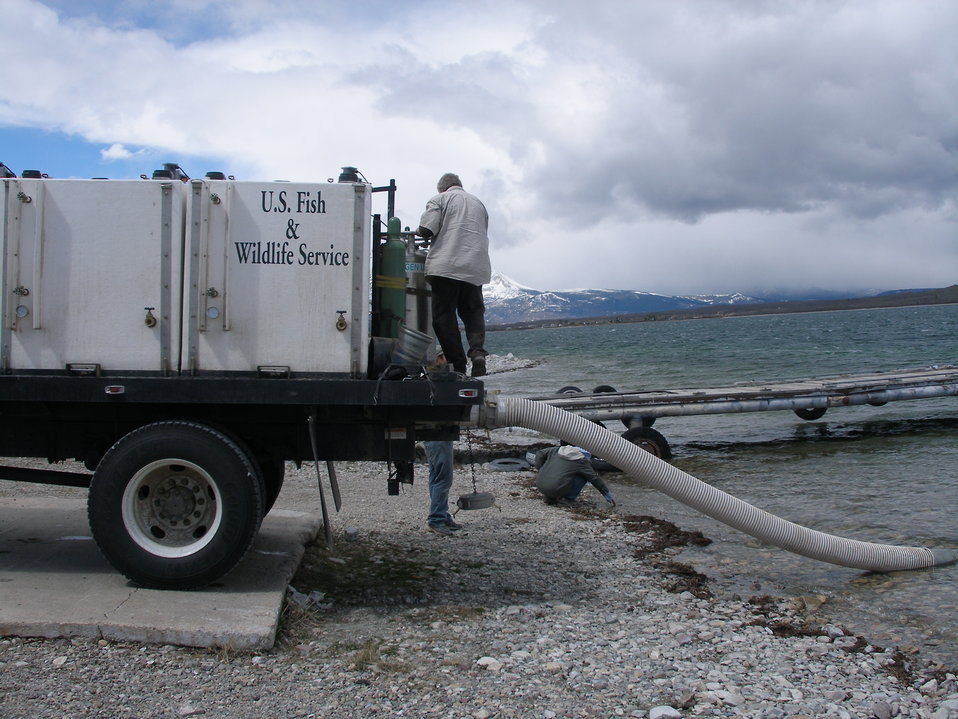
Creston National Fish Hatchery stocking fish at Duck Lake on the Blackfeet Reservation.